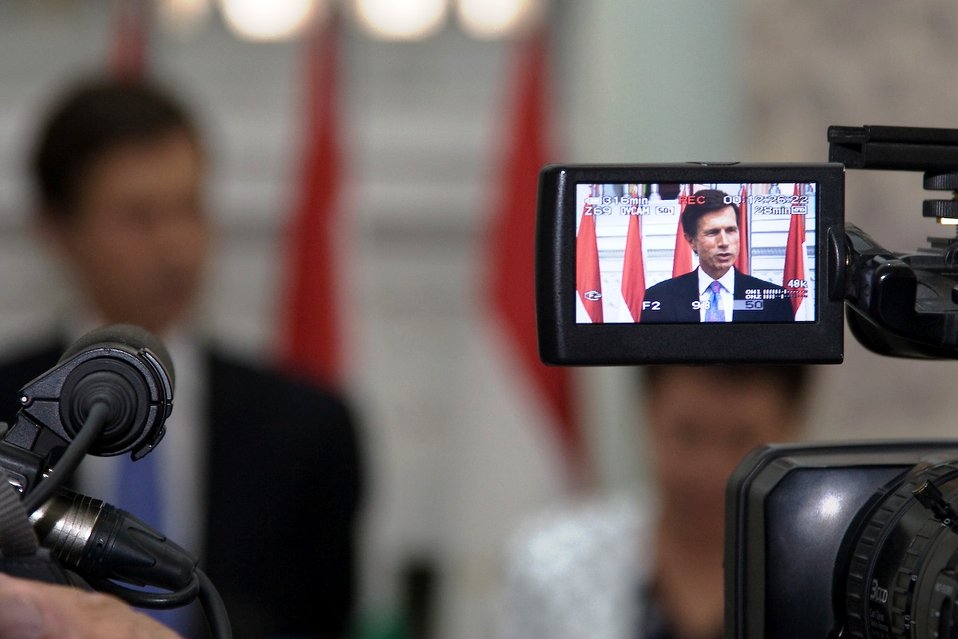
Behind the Scenes: Assistant Secretary Blake Visits Tajikistan

Behind the Scenes: U.S. Assistant Secretary of State Robert O. Blake visits Dushanbe, Tajikistan, on September 1, 2010.